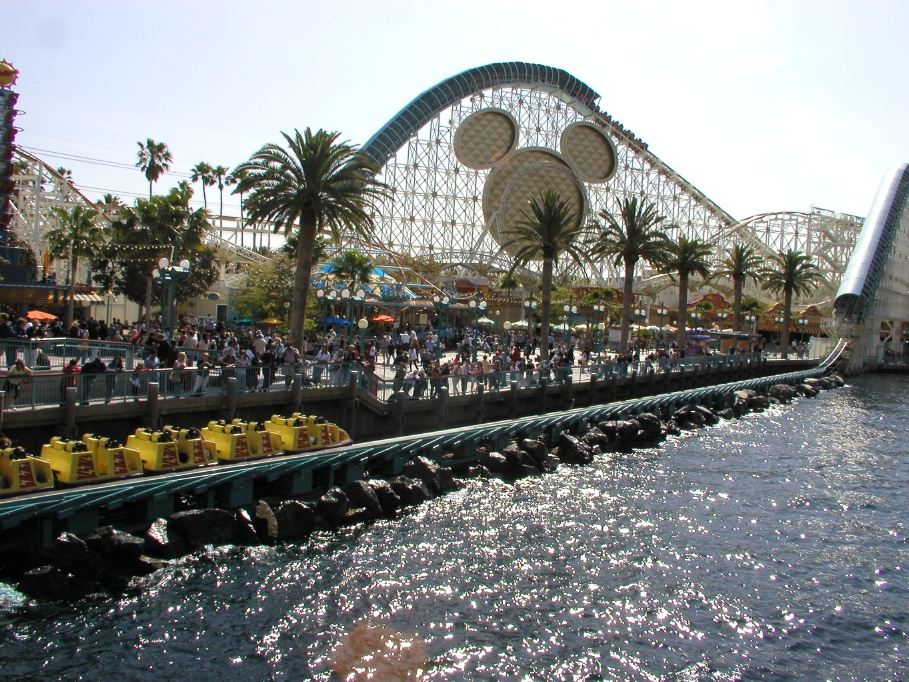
California Screamin' & Paradise Pier Area Photograph taken in 2002